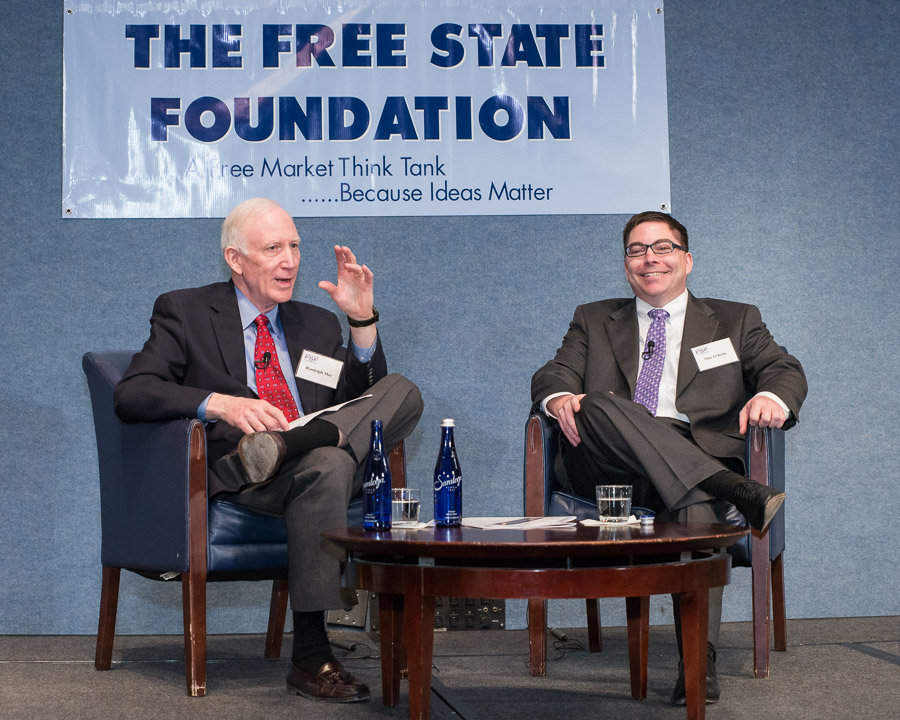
3.18.2014 Free State Foundation

FCC Commissioner Michael O'Rielly & Randolph May, President of The Free State Foundation.